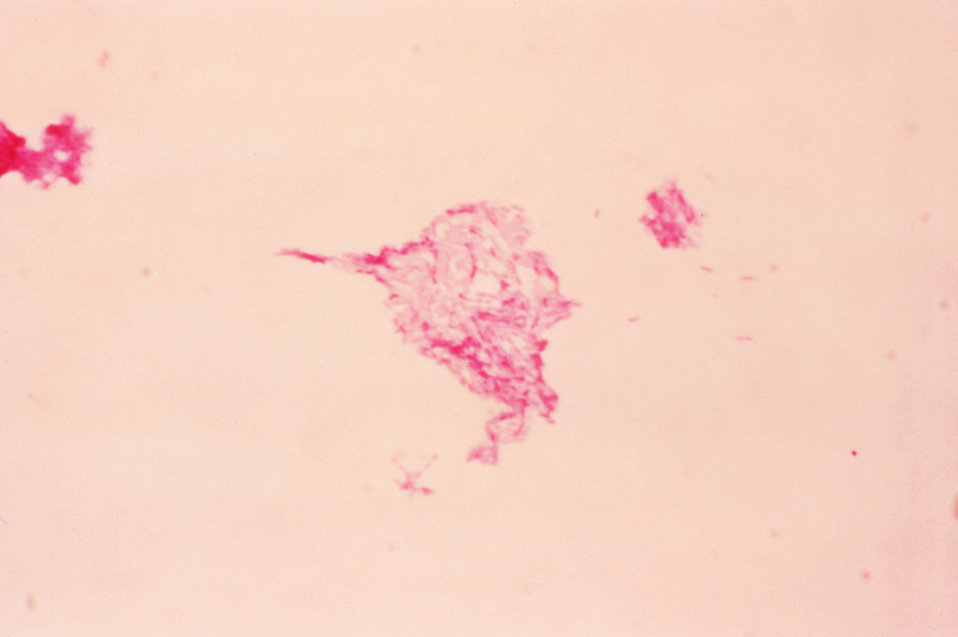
This is a photomicrograph of a rabbit blood culture showing Haemophilus ducreyi bacteria using Gram-stain technique.